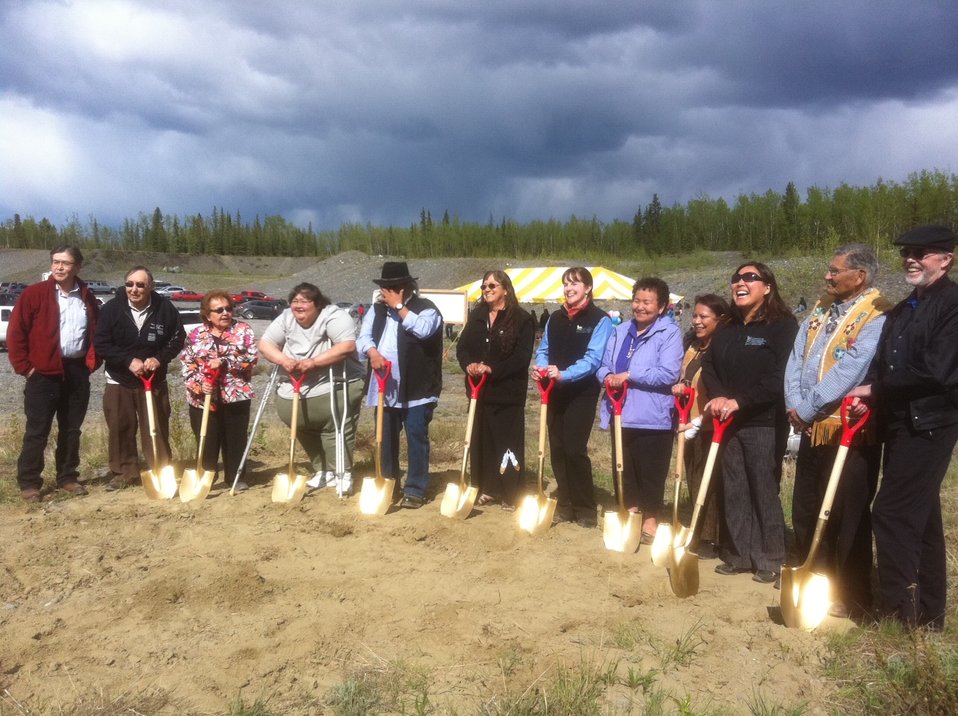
photo3

Members of the Copper River community stand “shovel ready” for the groundbreaking of the Copper River Native Association health care and administrative facility in Tazlina, AK on May 31, 2012. The project is a joint venture between U.S. Department of Agriculture’s (USDA) Rural Development (RD) Community Facilities direct loan program, the U.S. Housing and Urban Development, and the State of Alaska. This new facility will replace the existing 40-year old scattered site facilities.